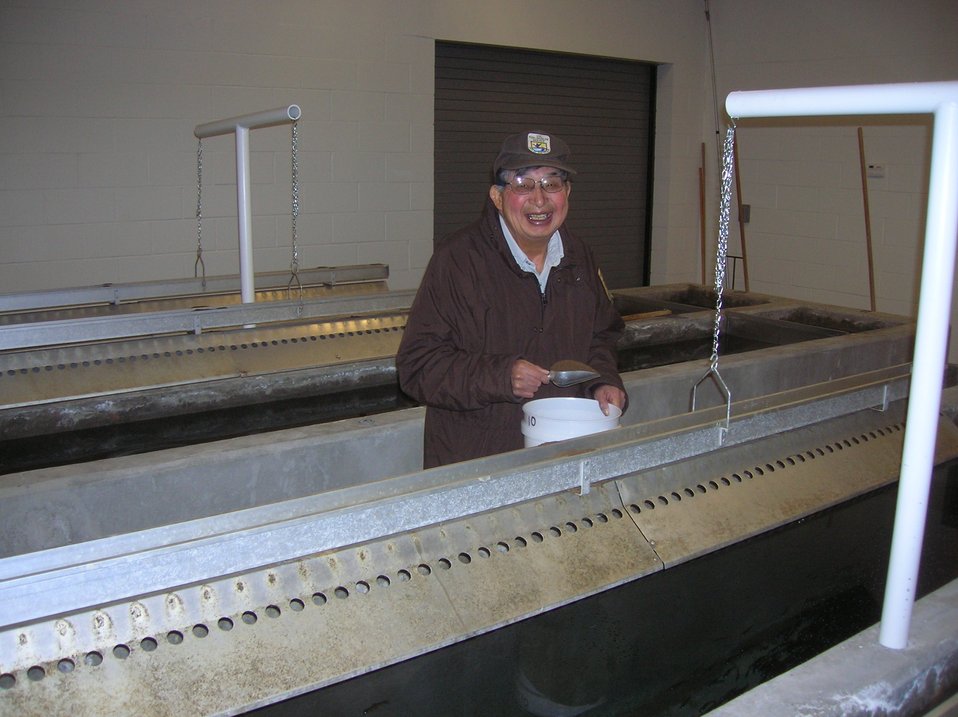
Jackson Hole National Fish Hatchery

Part-time worker, David Dodge, feeds the hatchery fish.